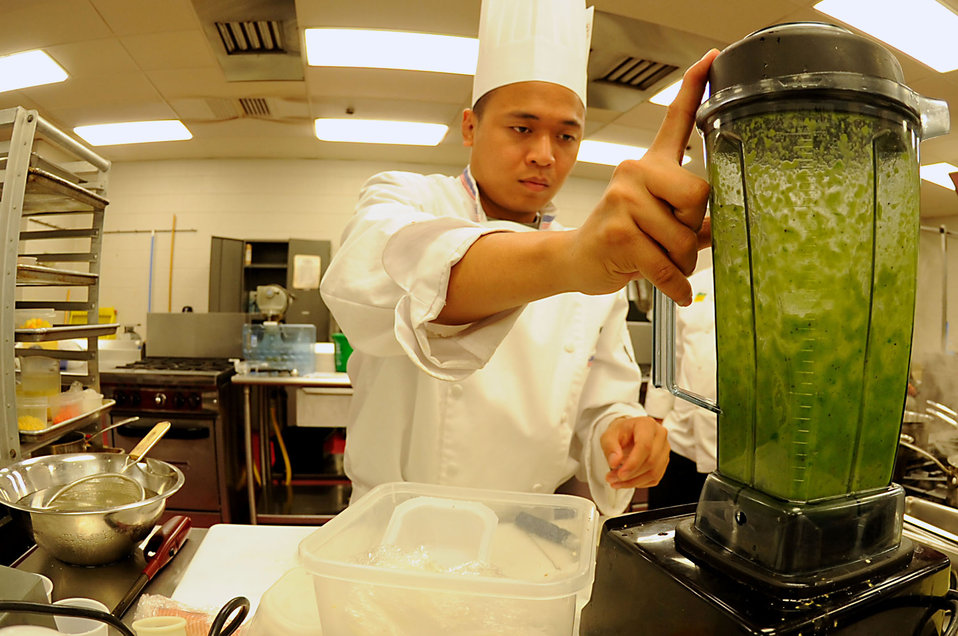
Prepping for success

Staff Sgt. Ghil Medina participates in culinary training July 13, 2011, at the U.S. Army Combined Sustainment Center of Excellence at Fort Lee, Va. Medina is a services journeyman assigned to the 633rd Force Support Squadron.